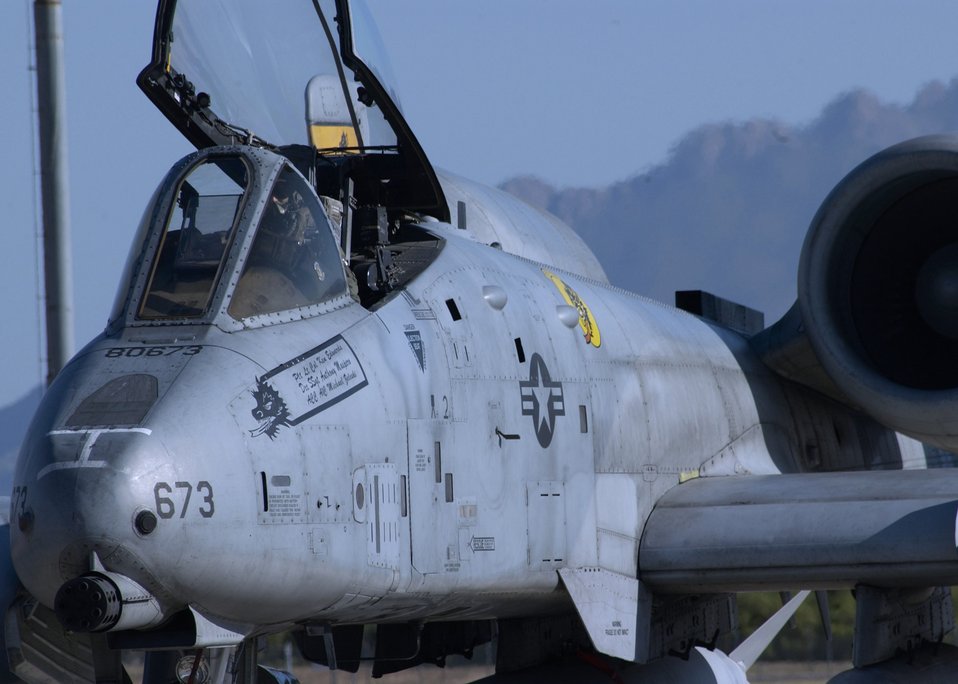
Deploying thunder

DAVIS-MONTHAN AIR FORCE BASE, Ariz. -- An A-10 Thunderbolt II assigned to the 357th Fighter Squadron here prepares to deploy during a local exercise. The exercise demonstrated the wing's ability to deploy people, equipment and aircraft to support contingency operations.